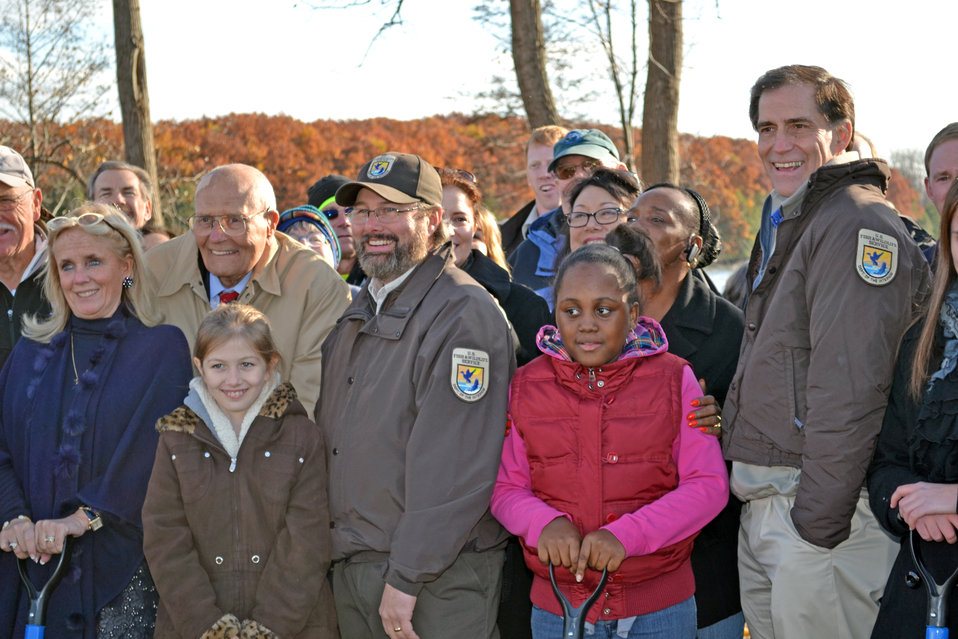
Looking to the future

Detroit River International Wildlife Refuge groundbreaking celebration.